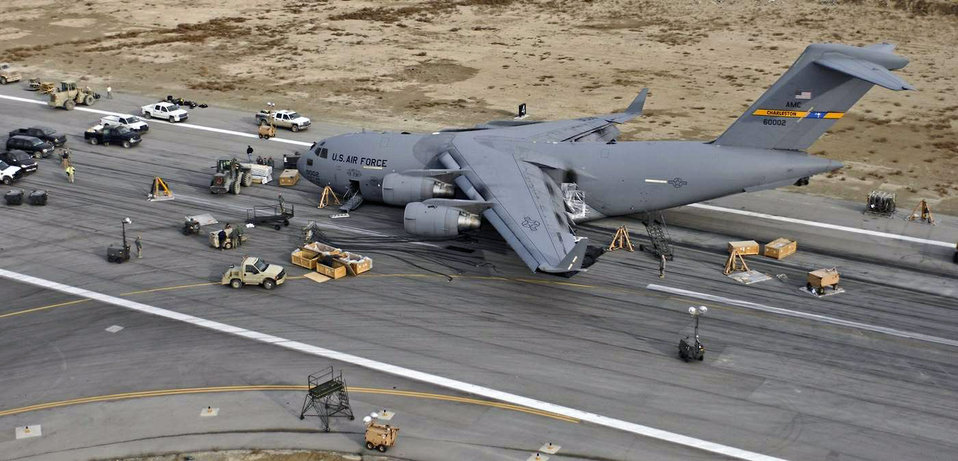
Bagram Airmen recover crippled aircraft

Crash recovery and emergency management crews survey a C-17 Globemaster III Jan. 31 as it rests on the active runway of Bagram Airfield, Afghanistan, after landing Jan. 30 with its landing gear retracted. More than 120 Airmen, Defense Department civilians and contractors successfully removed the crippled aircraft from the runway Feb. 2 and restored full airfield operations shortly thereafter. The